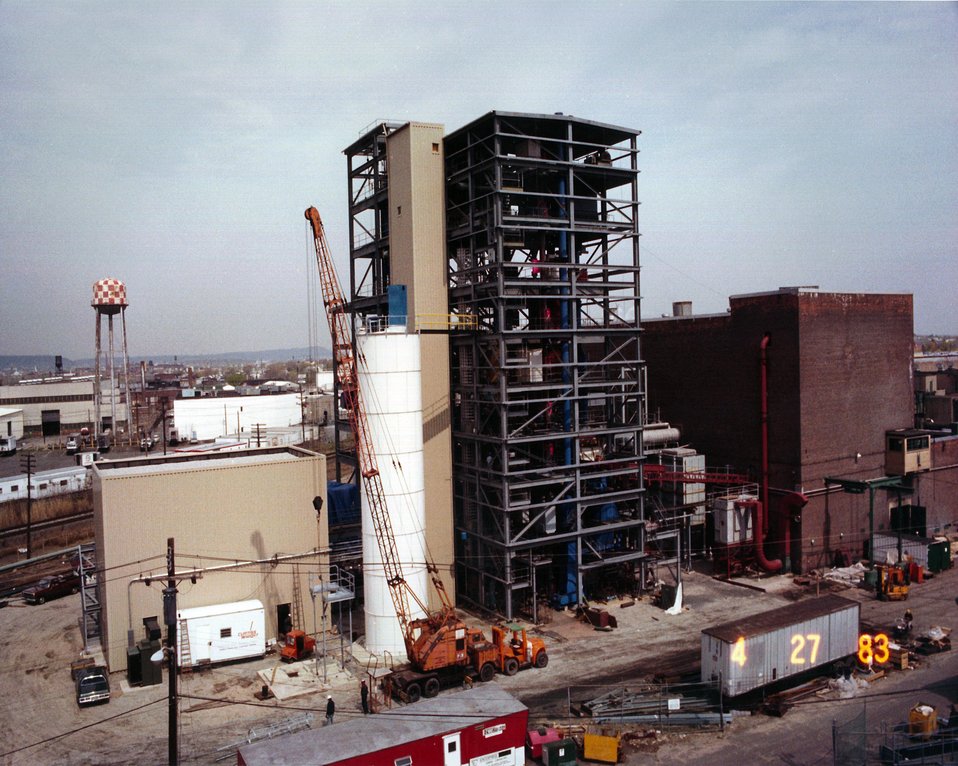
OVERALL VIEW OF THE PFB PLANT.

THE FLUIDIZED-BED BOILER SUSPENDS CRUSHED COAL AND LIME- STONE ON AN UPWARD-BLOWING CUSHION OF AIR. THE MIXTURE TAKES ON MANY OF THE PROPERTIES OF A TURBULENT LIQUID- HENCE THE NAME 'FLUIDIZED-BED'. AT THE COMBUSTION TEMPERA- TURES OF 1500-1600 DEGREES F., THE LIMESTONE CHEMICALLY ABSORBS THE SULFUR RELEASED FROM THE COAL, PREVENTING IT FROM BEING RELEASED INTO THE ATMOSPHERE. THE PRODUCT IS CALCIUM SULFATE, A DRY, INERT SUBSTANCE DISCHARGED WITH THE ASH. IN THE 'PRESSURIZED FLUIDIZED BED' CONCEPT, THE COM- BUSTOR IS PRESSURIZED TO 6-16 TIMES ATMOSPHERIC PRESSURE. THE HEATED, HIGH PRESSURE GASES WOULD HAVE ENOUGH ENERGY FIRST TO SPIN A GAS TURBINE DIRECTLY, THEN TO PRODUCE STEAM THAT WOULD RUN A FOLLOW-ON STEAM TURBINE. SUCH A DUAL GENERATING SYSTEM IS CALLED COMBINED-CYCLE SYSTEM.